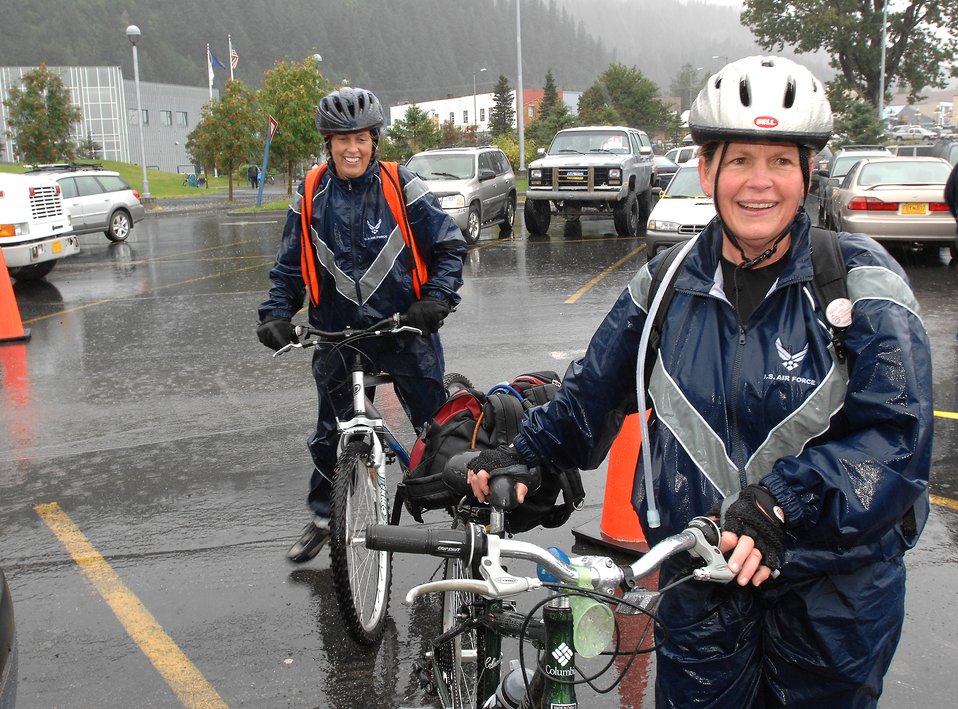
Arctic Warriors join battle against MS

Maj. Julie Ostrand and Capt. Wendy Koehler arrive in Seward after completing the first leg of the Alaska Multiple Sclerosis Bike Ride Sept. 8 along a section of the Seward Highway in the Kenai Peninsula, Alaska. The ride took participants from Mile 63 on the Kenai Peninsula along the Seward Highway to Seward, Alaska. Consistent and sometimes heavy rains didn't prevent Major Ostrand and Captain Koehler, both nurse practitioners at the 3rd Medical Group, and other Airmen from Elmendorf Air Force Base, Alaska, from completing the ride, which took place Sept. 8 and 9. People who took the 126-mile round trip ride saw extreme elevation gains challenging even the most experienced of the 200 riders. All proceeds from this event went to the National Multiple Sclerosis Society.